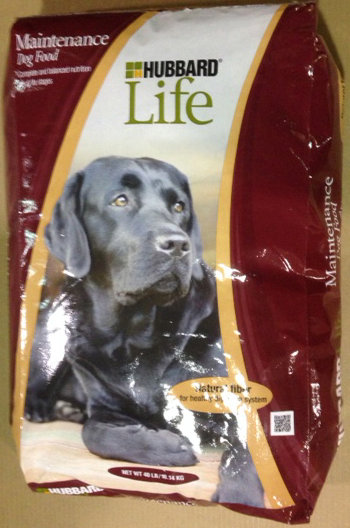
RECALLED – Dog Food, Cat Food

February 5, 2014 – Product Recall – Pro-Pet LLC Recalls a Limited Number of Dry Dog and Cat Foods Due to Possible Salmonella Contamination.